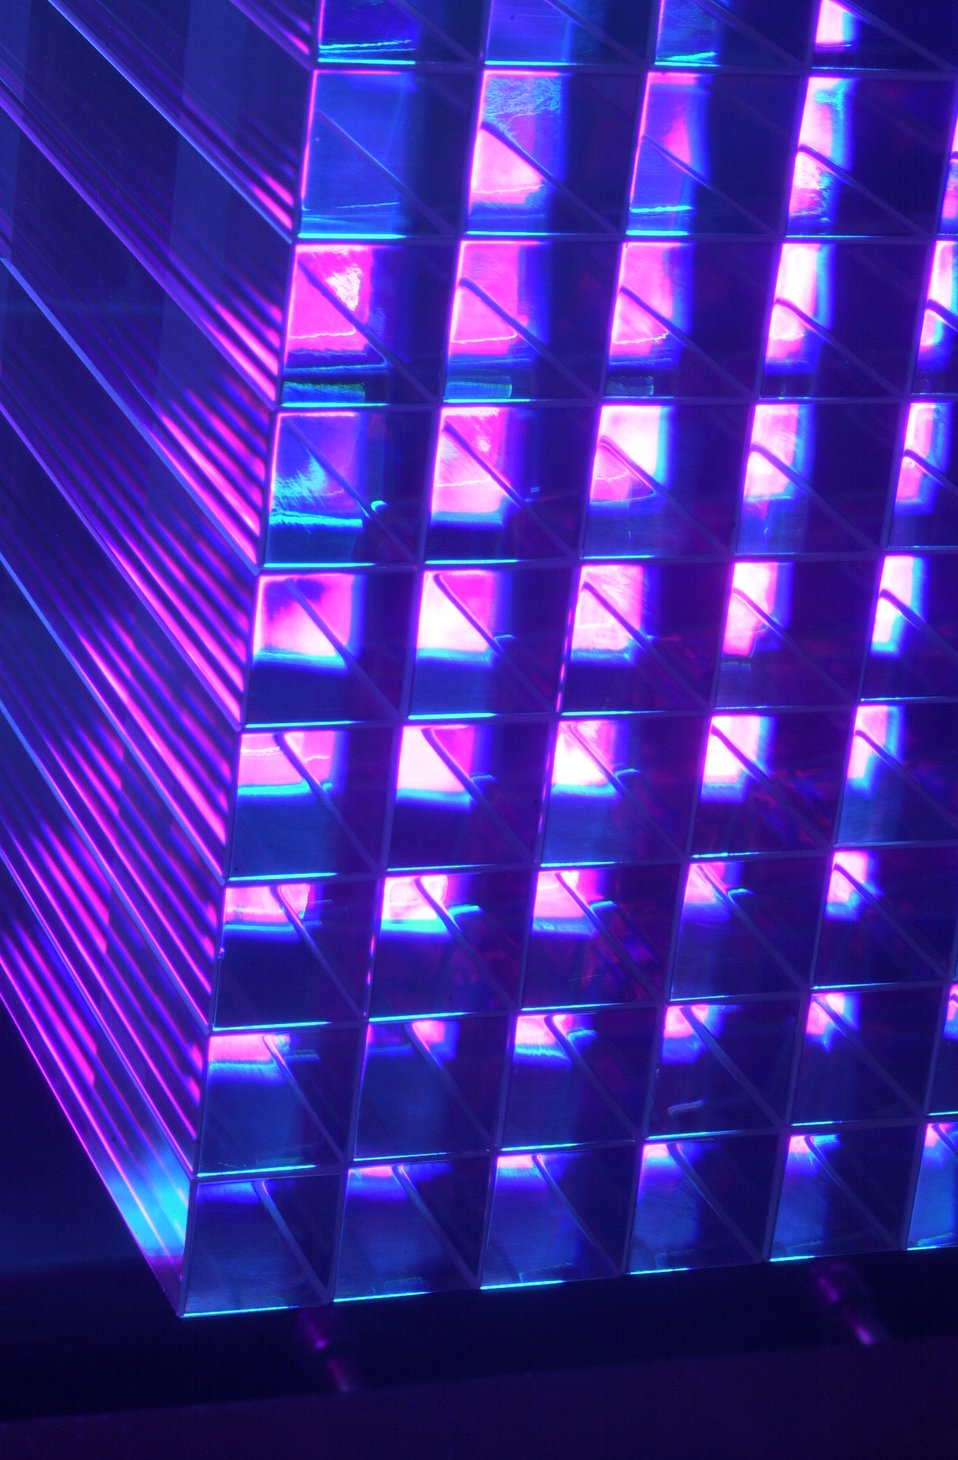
SECTIONS OF LEAD-TUNGSTATE SCINTILLATOR CRYSTALS IN A SUPPORT FRAME FOR THE PRIMAKOFF EXPERIMENT (PRIMEX) IN HALL B AT THOMAS JEFFERSON NATIONAL ACCELERATOR FACILITY.

The Jefferson lab is built for nuclear physics research. Scientists use superconducting electron accelerating technology at the lab's Continuous Electron Beam Accelerator Facility (CEBAF) to conduct experiments. High energy electron beams from the accelerator allows scientists to probe the atoms nuclear, reveling how quarks make up protons, neutrons, and the nucleus itself.